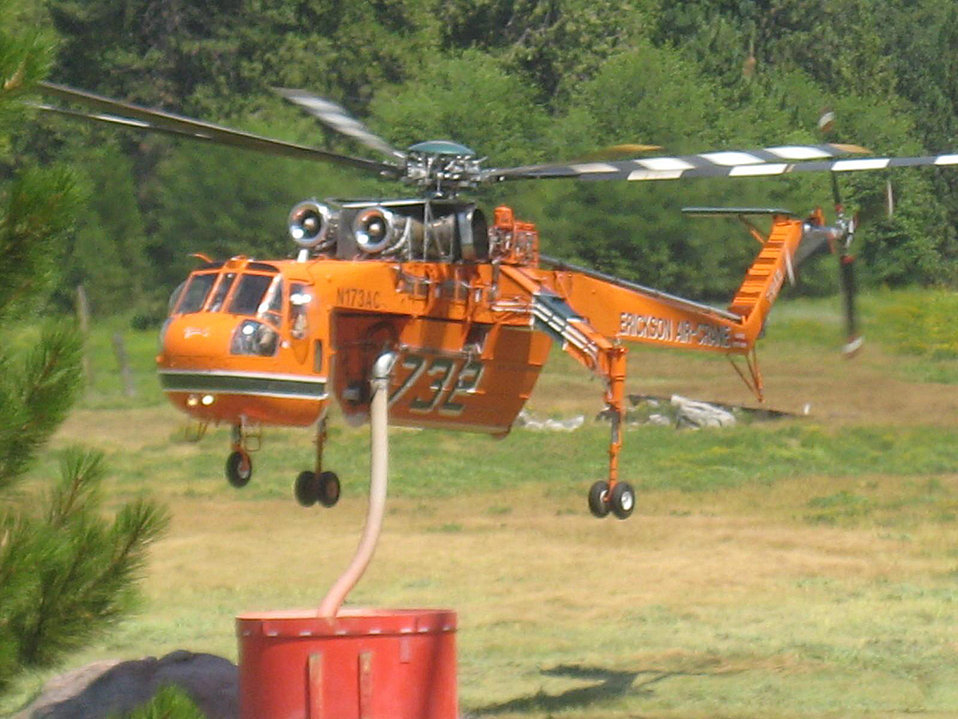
An Erickson Air-Crane refills their tank for more water drops on the Aspen Fire. The Aspen Fire in the Sierra National Forest near Big Creek, CA began on Jul. 22, 2013 by lightning and has consumed approximately 16, 204 acres and is approximately 40% contained.